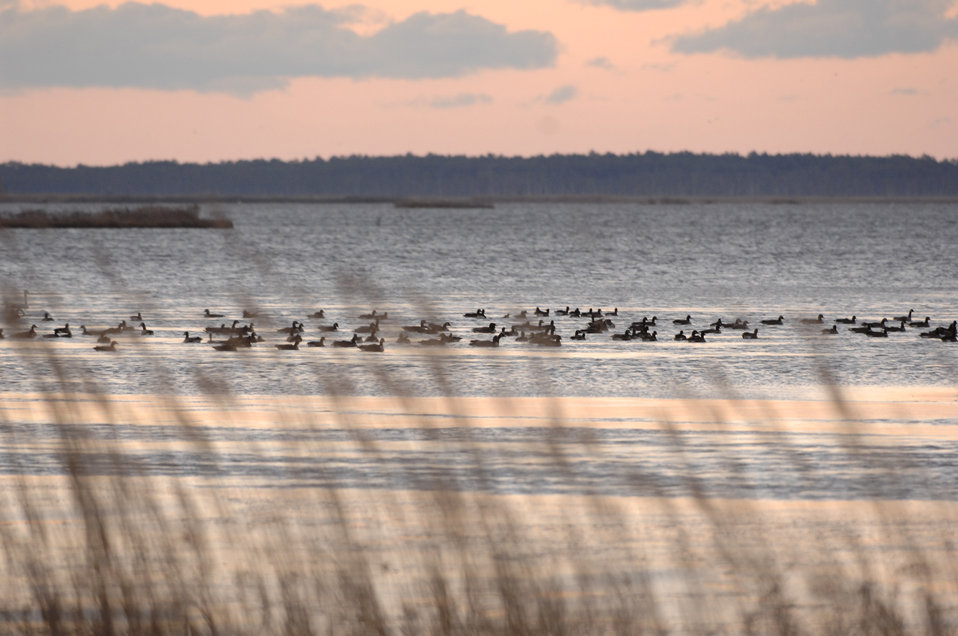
The sun rises over a flock of Canadian geese on Blackwater Marsh at Blackwater National Wildlife refuge in Cambridge, Maryland on March 9, 2006. The refuge is a waterfowl sanctuary for migrating birds along the critical migration highway called the Atlantic Flyway. Blackwater refuge has over 25,000 acres of freshwater impoundments, brackish tidal wetlands, open fields, and mixed evergreen and deciduous forests.